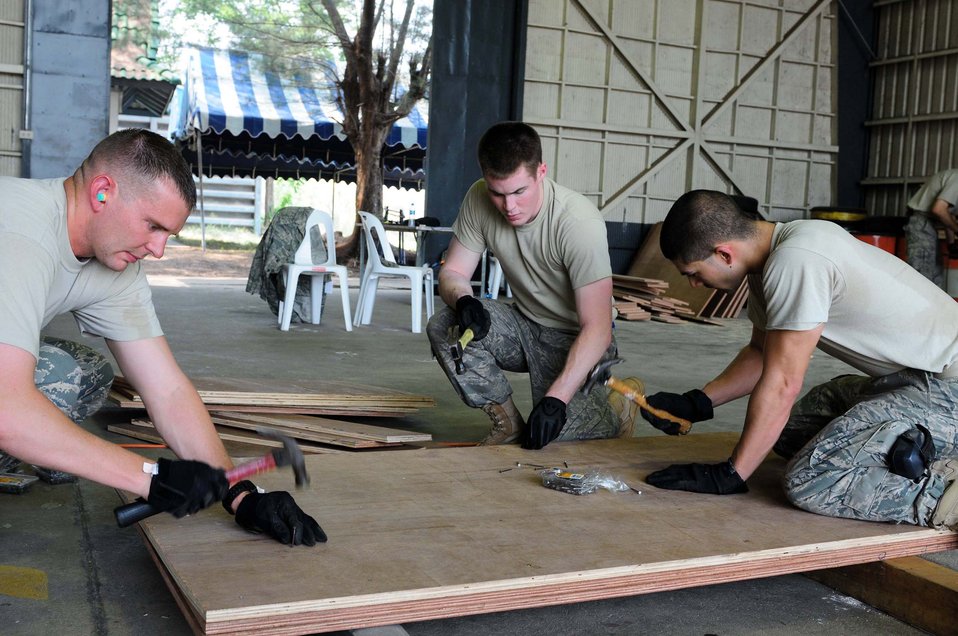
Airmen arrive in Thailand for Cope Tiger 2010

Staff Sgt. Jeremy Hayes (left to right), Airman 1st Class Matthew Brewer and Airman 1st Class Tyler Siebrass prepare pallets that will be used for airdrops conducted during this year's Exercise Cope Tiger Feb. 28, 2010, at Udon Thani Royal Thai Air Force Base, Thailand. Sergeant Hayes is deployed from Joint Base Pearl Harbor-Hickam, Hawaii; Airman Brewer is from Yokota Air Base, Japan; and Airman Siebrass is from Elmendorf Air Force Base, Alaska.